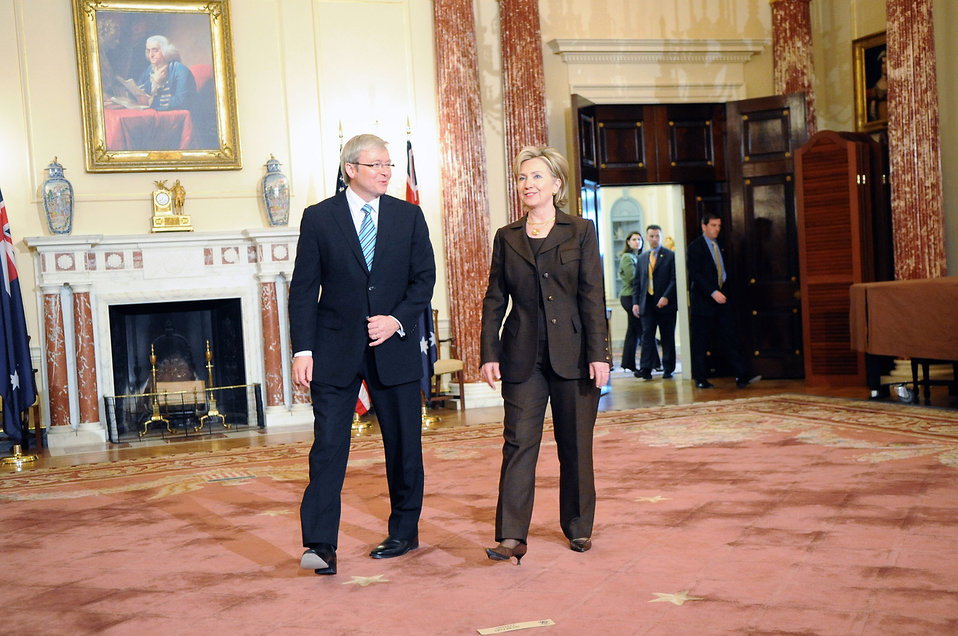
Secretary Clinton Meeting With Australian Prime Minister

U.S. Secretary of State Hillary Rodham Clinton during a meeting with Australian Prime Minister Kevin Michael Rudd in Washington, DC March 24, 2009.